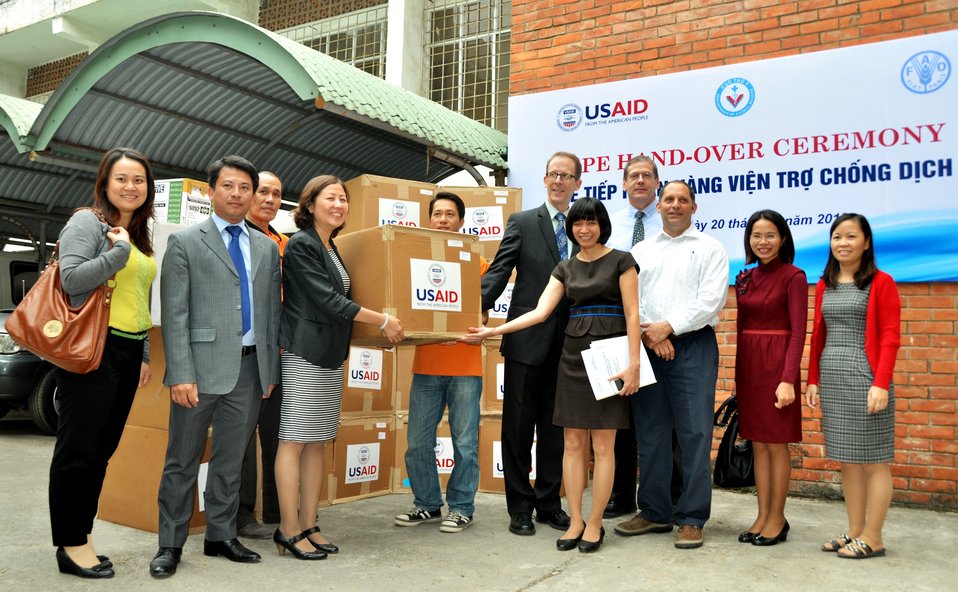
USAID hands over personal protective equipment to the Department of Animal Heath under Vietnam’s Ministry of Agriculture and Rural Development.

Hanoi, November 20, 2013.